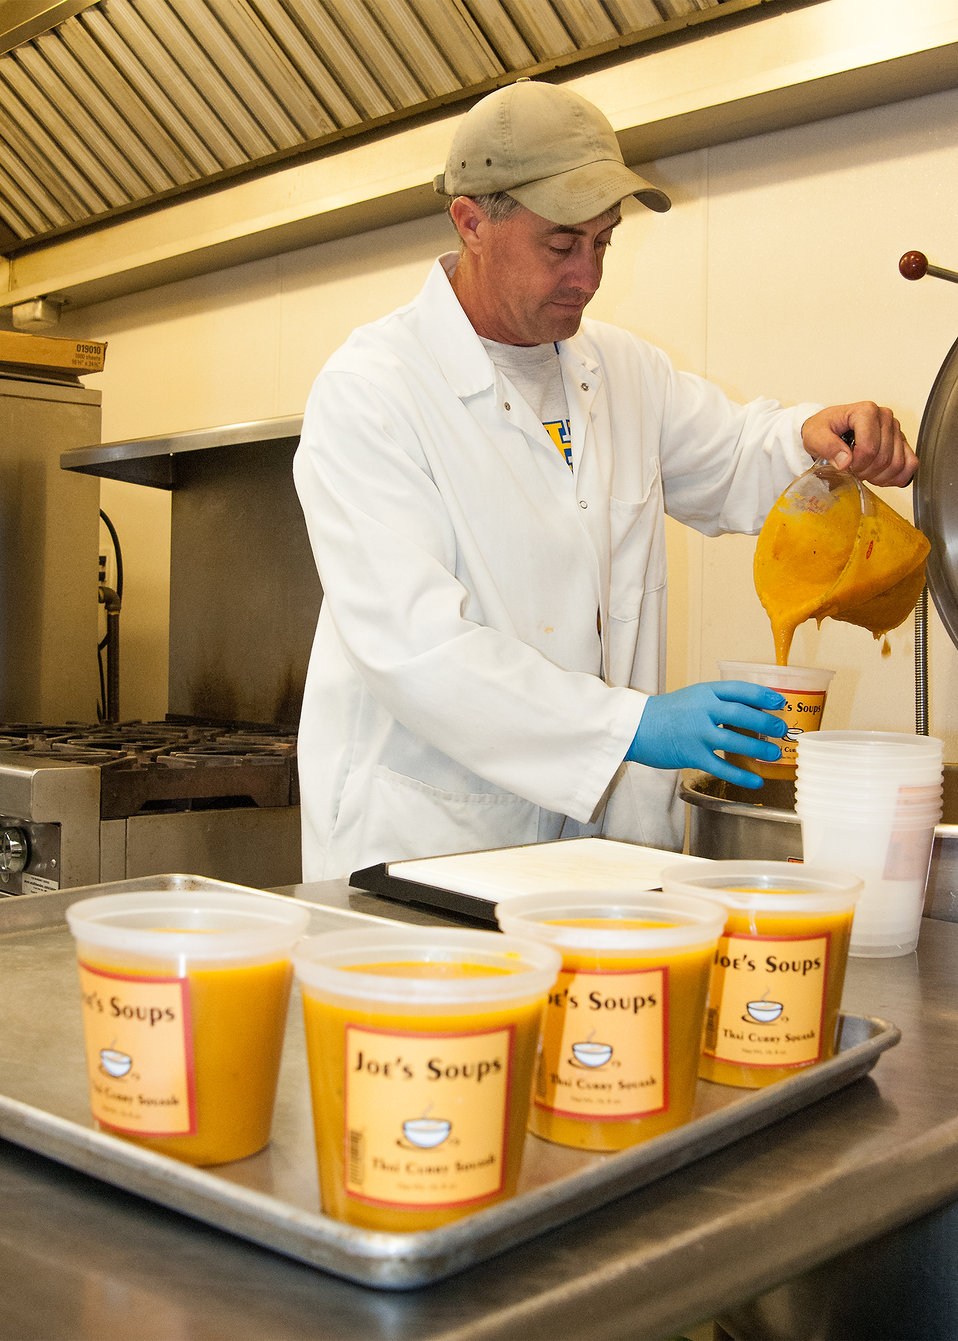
Joe Buley packages enchilada sauce produced at the Mad River Food Hub in Waitsfield, VT at Screamin' Ridge Farm in East Montpelier, VT. The Mad River Food Hub received a U.S. Department of Agriculture (USDA) Rural Development (RD) Rural Business Enterprise Grant for the local farmers to grow vegetables, produce meat products and convert them to value added products ready for market on Sep 17, 2013.